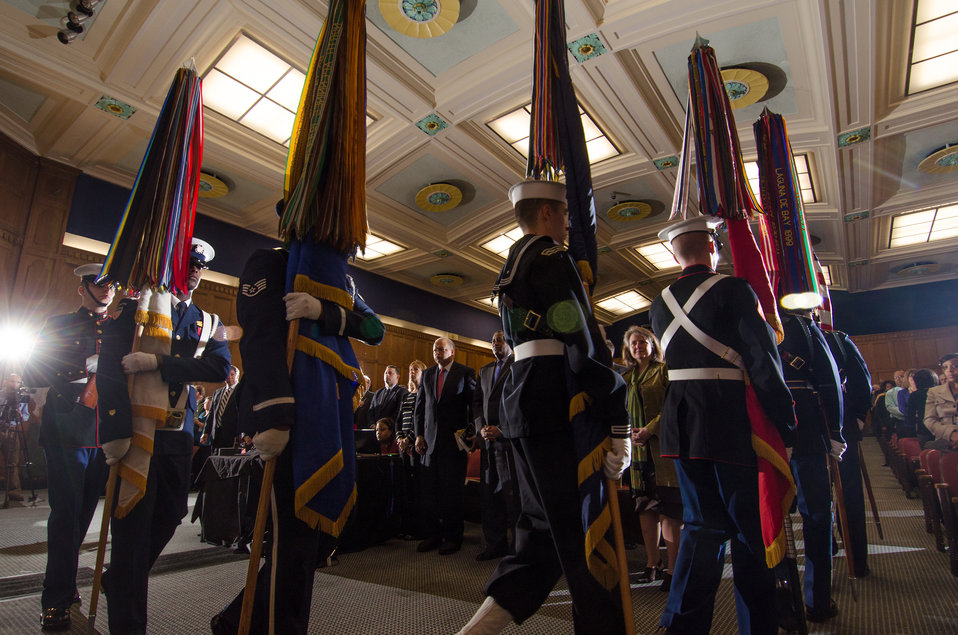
The Joint Military Honor Guard depart after presenting the Colors at the beginning of the U.S. Department of Agriculture (USDA) Dr. Martin Luther King, Jr. National Service Day Drum Major for Service Award ceremony, in Washington, D.C., on Tuesday, Jan. 15, 2013.